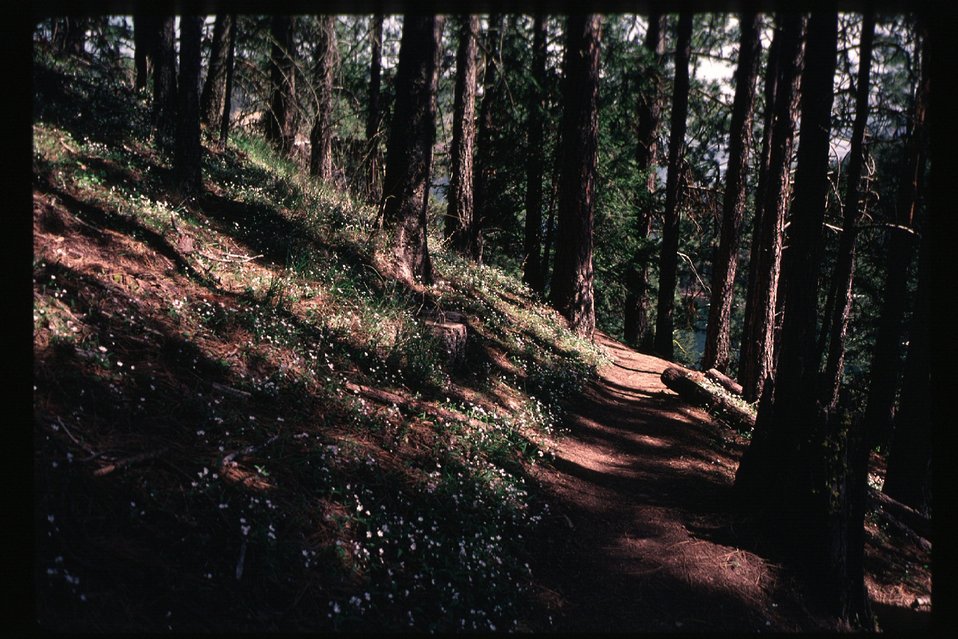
Forestry Couer d'Alene Field Office UCSC Upper Columbia Salmon Clearwater